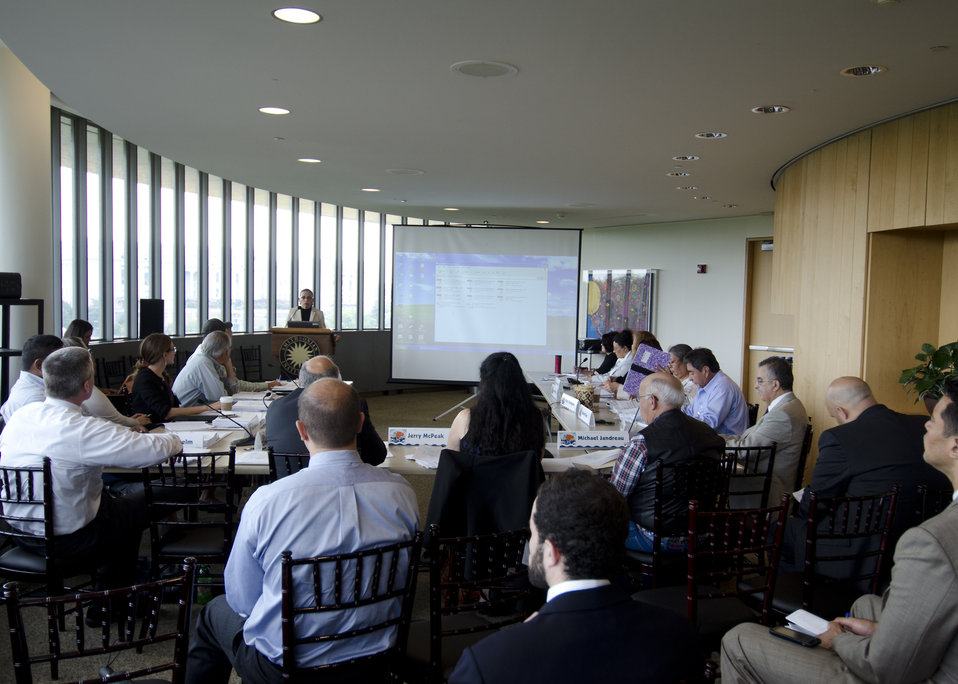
White House Senior Advisor to the President Jodi Gillette speaks at the first business meeting of the U.S. Department of Agriculture’s (USDA) Council for Native American Farming and Ranching (CNAFR) holds the first public/business meeting of the U.S. Department of Agriculture’s (USDA) Council for Native American Farming and Ranching (CNAFR) held at the National Museum of the American Indian in Washington, D.C., on Tuesday, Aug. 14, 2012. CNAFR was created to advise the Secretary on ways to eliminate barriers to participation for Native American Farmers and Ranchers in USDA programs. The Council was established as part of the Keepseagle settlement, and is conducted under the oversight of USDA's Office of Tribal Relations under the Office of the Secretary of Agriculture.